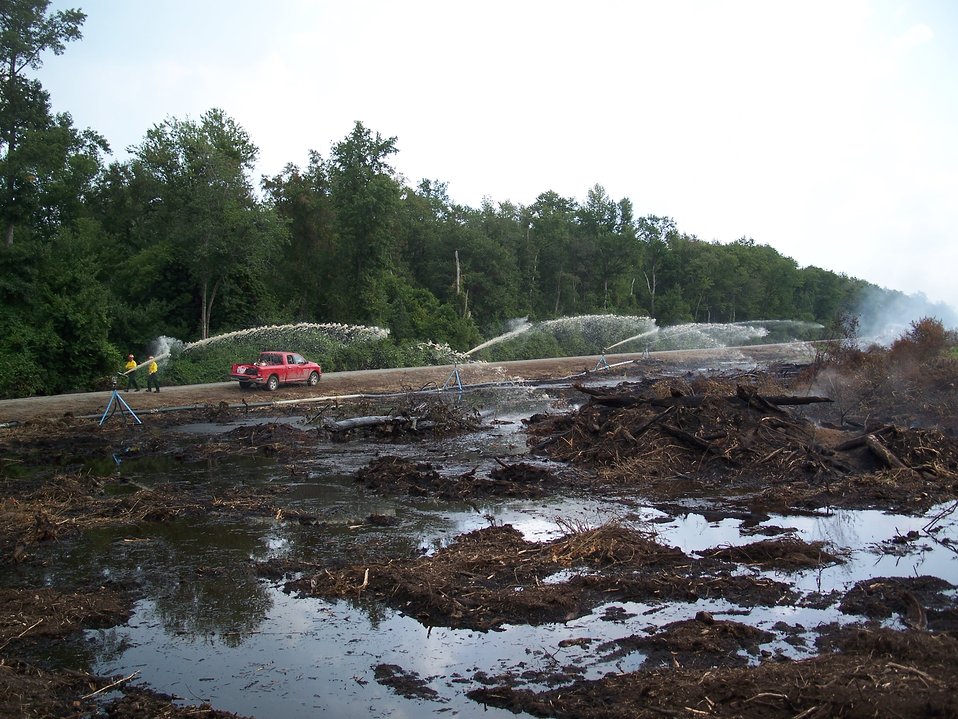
Water show

Suffolk, VA, August 2011. Sprinklers mounted on tripods along Interior Ditch, Great Dismal Swamp National Wildlife Refuge saturate deep peat soils burning in the Lateral West Fire.